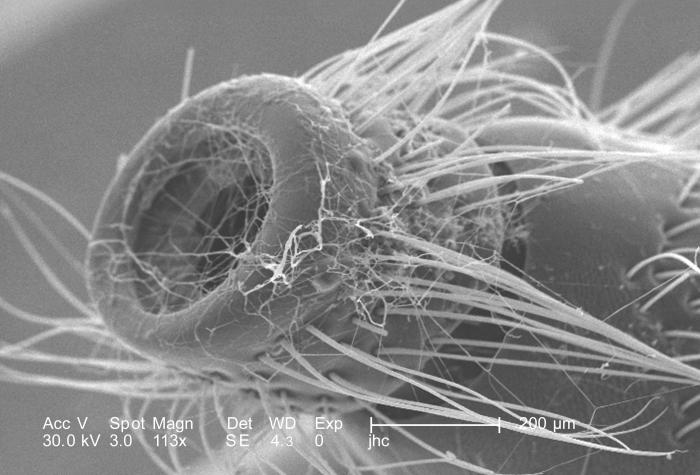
Under a low magnification of 113X, twice that of PHIL 10050, this scanning electron micrograph (SEM) depicted some of the exoskeletal morphologic characteristics displayed on the head region of an unidentified beetle found deceased in the suburbs of Decatur, Georgia. In this particular view, the first two segments of one of this insect's two antennae were visible, for the remaining antennal segments had been broken off. Debris coated the antenna's exterior.Created at the fracture point, was a cup-like cavitation, into which would have fit this organ's most proximal flagellar segment.The antenna is composed of three main regions: scape, pedicle, and flagellum. The scape, which is not visible in this view, attaches the sensory organ to the head region, and the pedicle joins the distal, jointed, multisegmented flagellum to the scape.